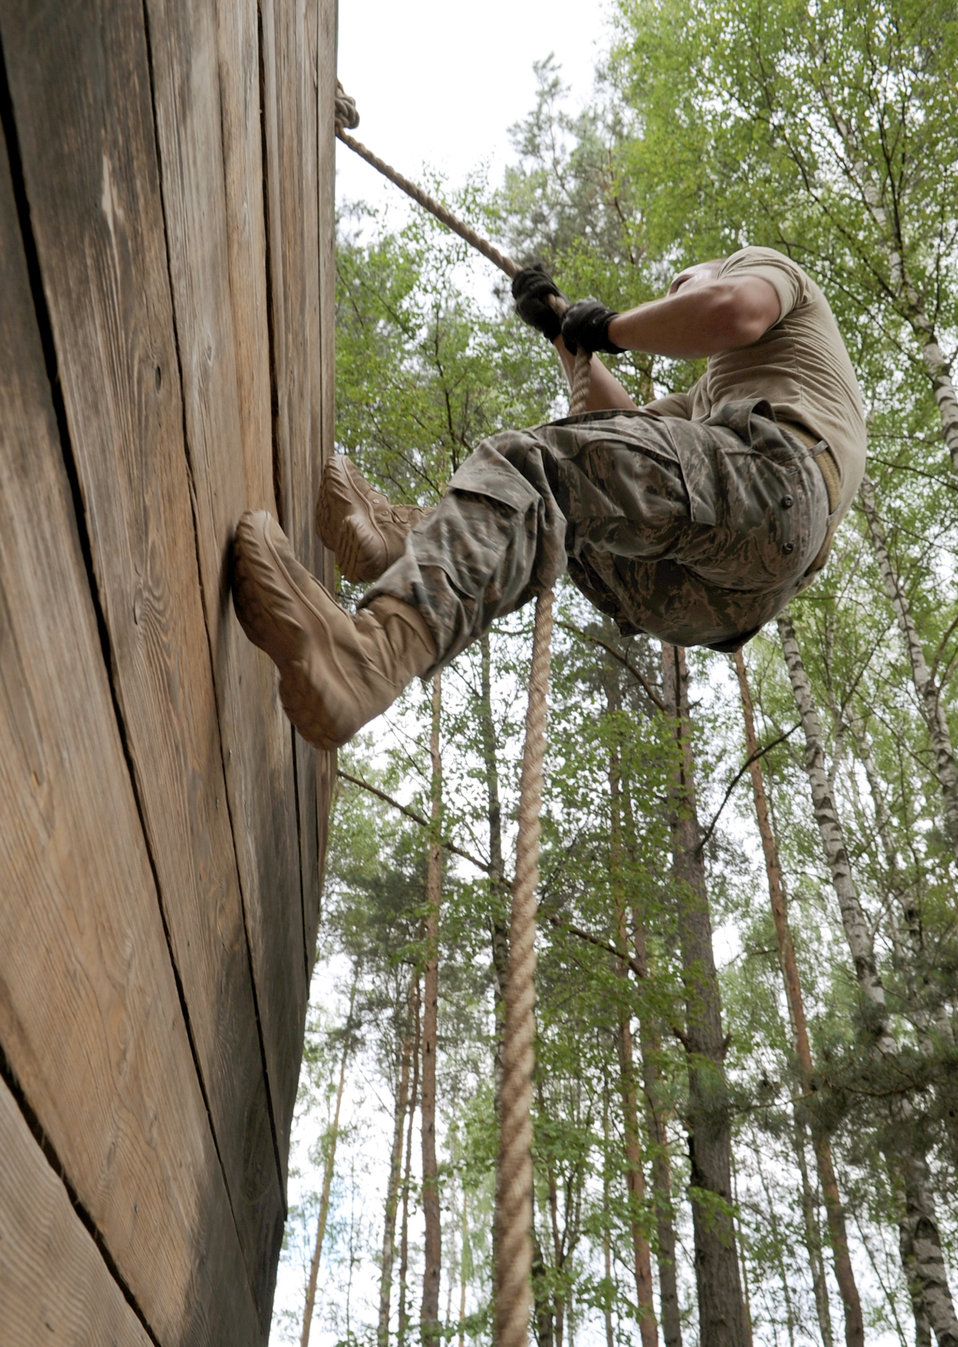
Exercise Allied Strike 10

Staff Sgt. Till Schanz attempts to complete an obstacle July 23, 2010 during Exercise Allied Strike 10 at the U.S. Army's training area in Grafenwoehr, Germany. Allied Strike is Europe's premier close air support that helps build partnership capacity among NATO nations.